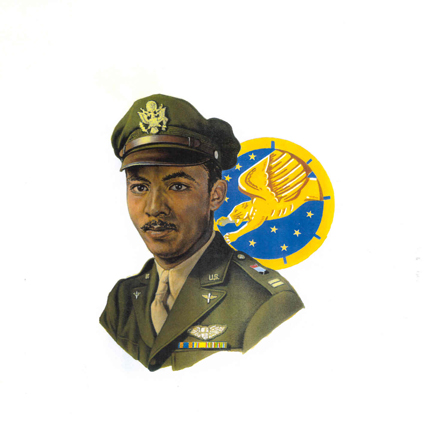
Tuskegee Airman Lt. Col. Herbert Carter

Retired Lt. Col. Herbert